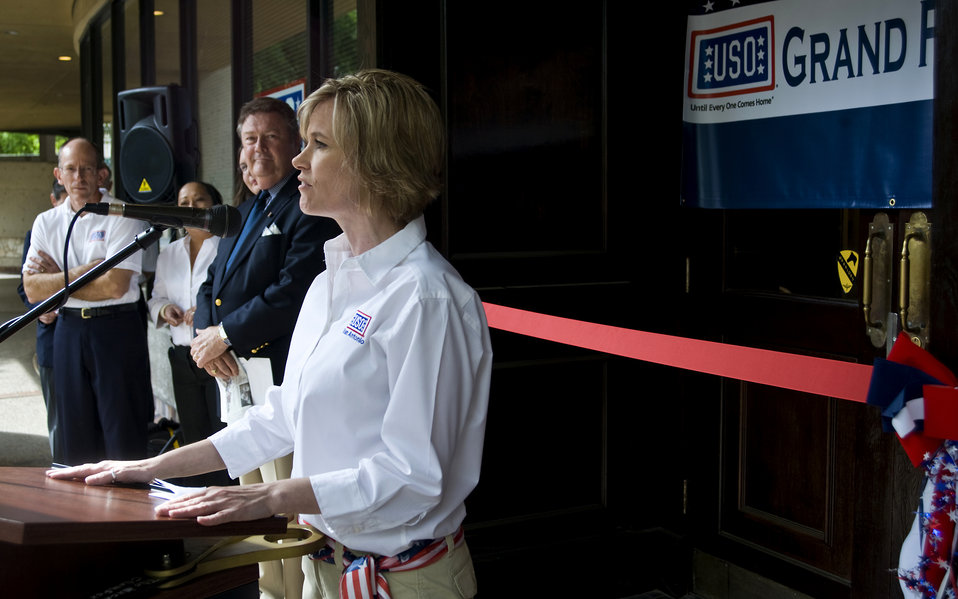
USO reopening in San Antonio

Shari Jenson, director of USO San Antonio, provides welcoming remarks Apr. 7, to the veterans and dignitaries present for the reoping of the USO San Antonio River Center. The center which averages 3,000 patrons a month was closed for a four month renovation to upgrade to a state-of-the-art-facility to better serve the troops stationed in the area.